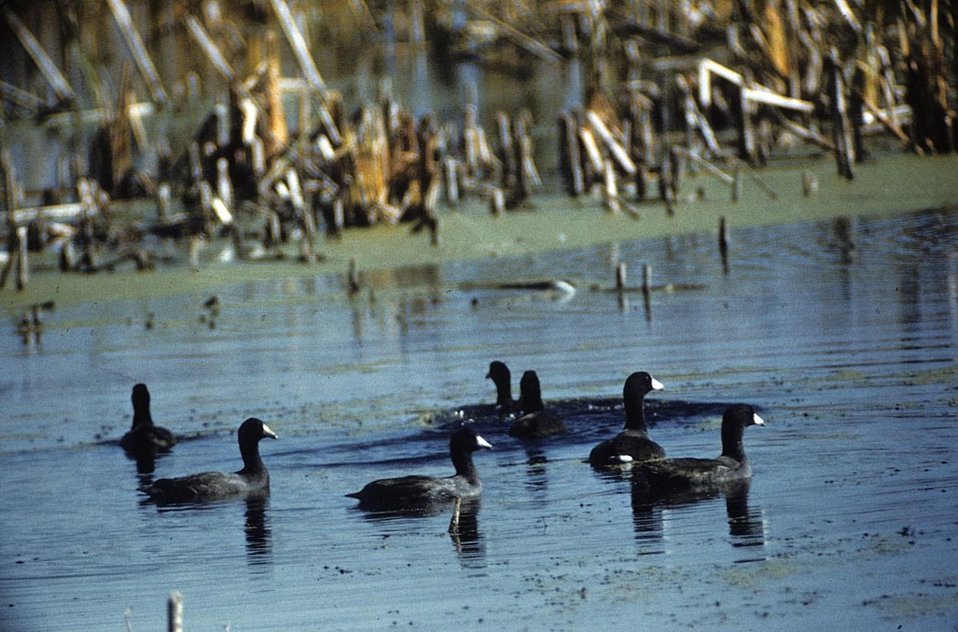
American Coot Flock.